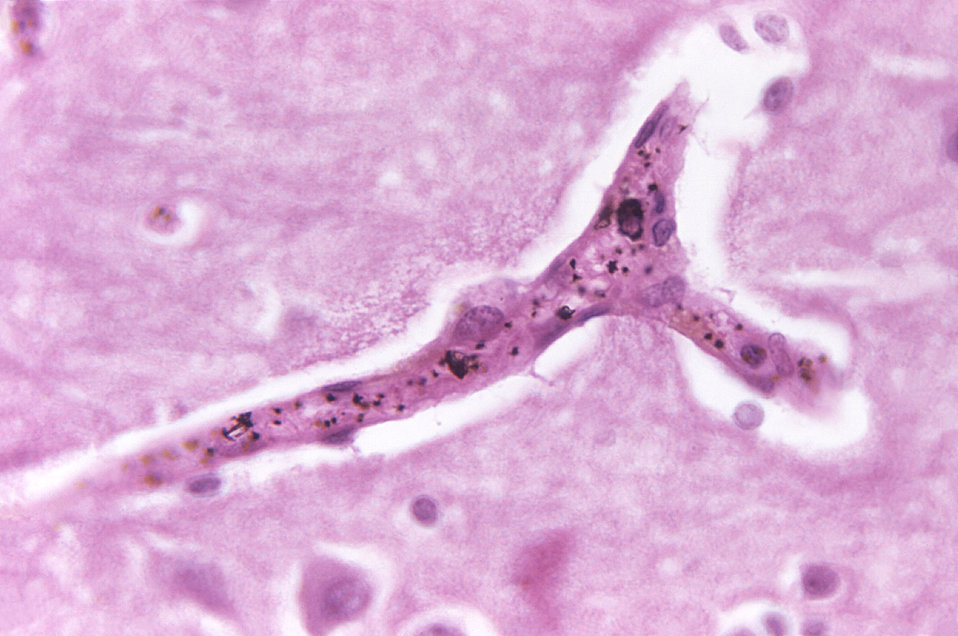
Histopathology of malaria pigment in brain capillary.